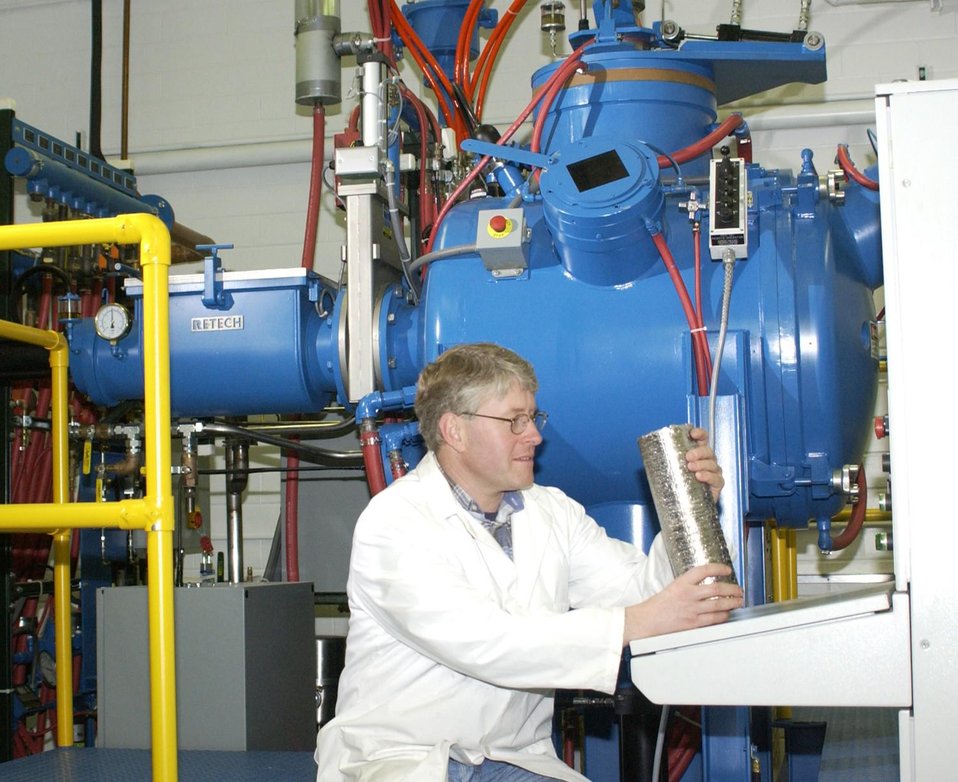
AMES RESEARCH TECHNICIAN HOLDS AN INGOT OF MATERIAL THAT WAS CONSOLIDATED IN THE RETECH 150 PLASMA FURNACE BEHIND HIM.

AMES LABORATORY'S MATERIALS PREPARATION CENTER'S POWERFUL TOOL CAN MELT EVEN THE TOUGHEST ALLOYS. CAPABLE OF GENERATING TEMPERATURES IN EXCESS OF 10,000 DEGREES CELSIUS, THE RETECH MODEL 150 PLASMA LAB FURNACE IS USED TO MELT REACTIVE METAL ALLOYS WITHOUT THE USE OF CRUCIBLE, THEREBY ELIMINATING THE POSSIBILITY OF THE CRUCIBLE MATERIAL REACTING WITH THE METAL, AND CONTAMINATING THE MOLTEN METAL.